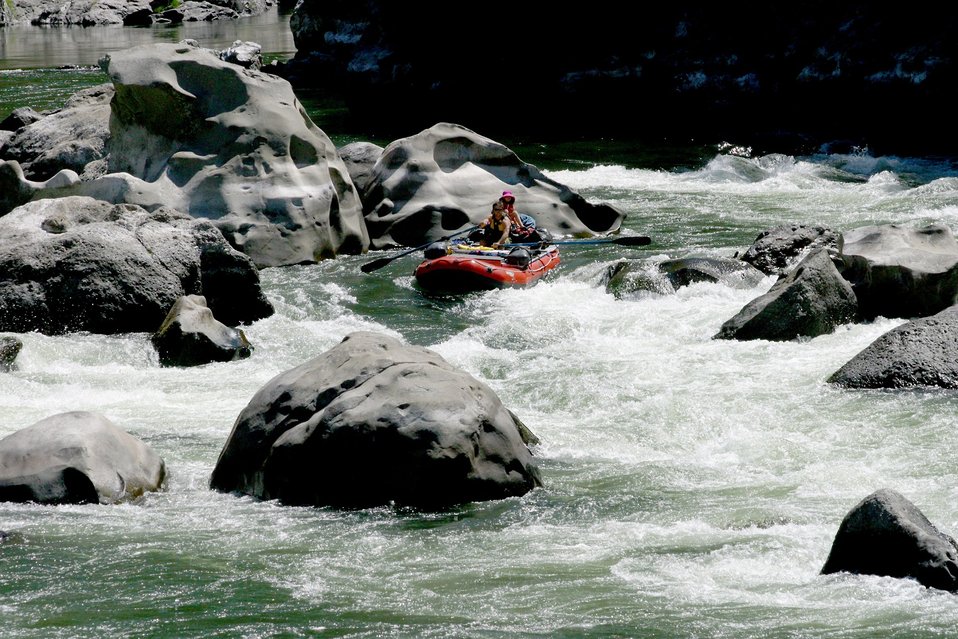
Boaters negotiate Blossom Rapids.